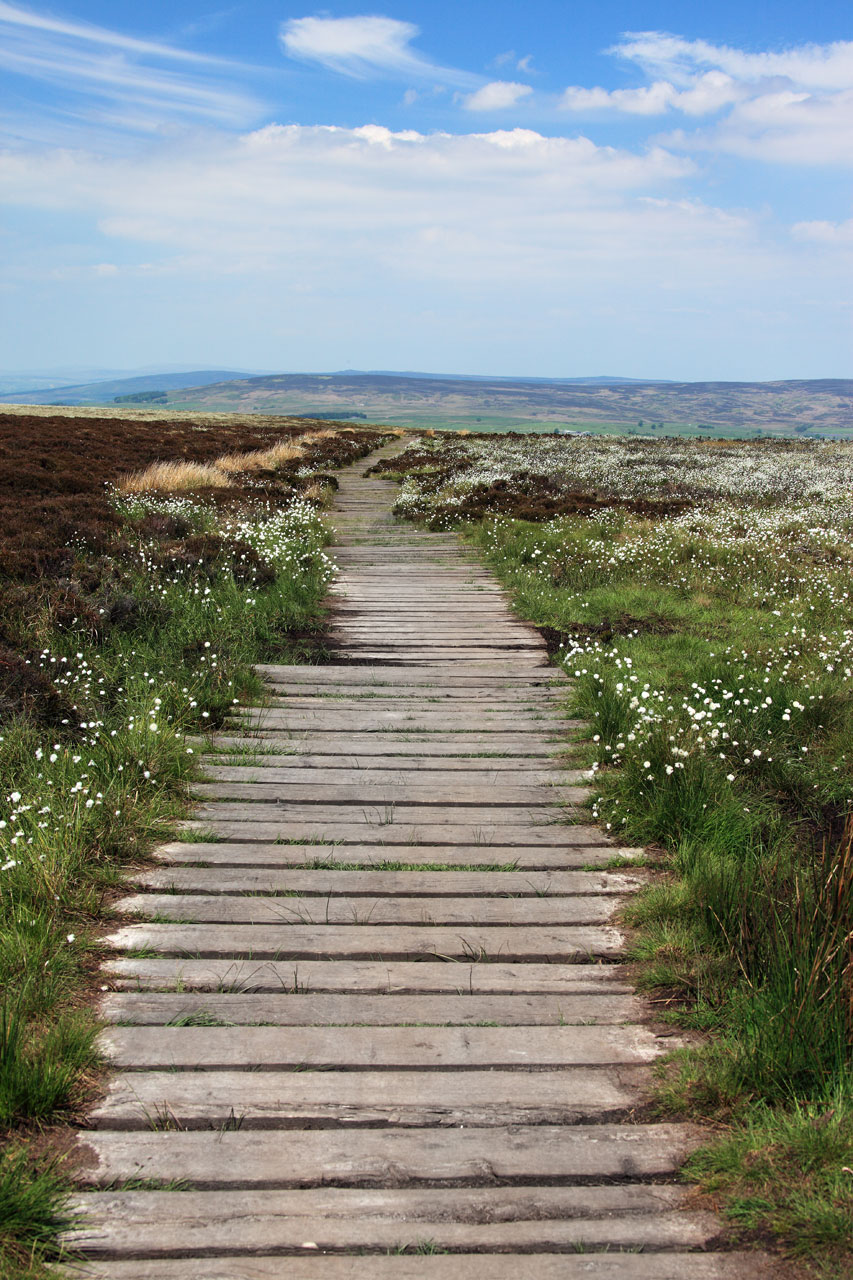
Wooden boardwalk in ilkley moors.